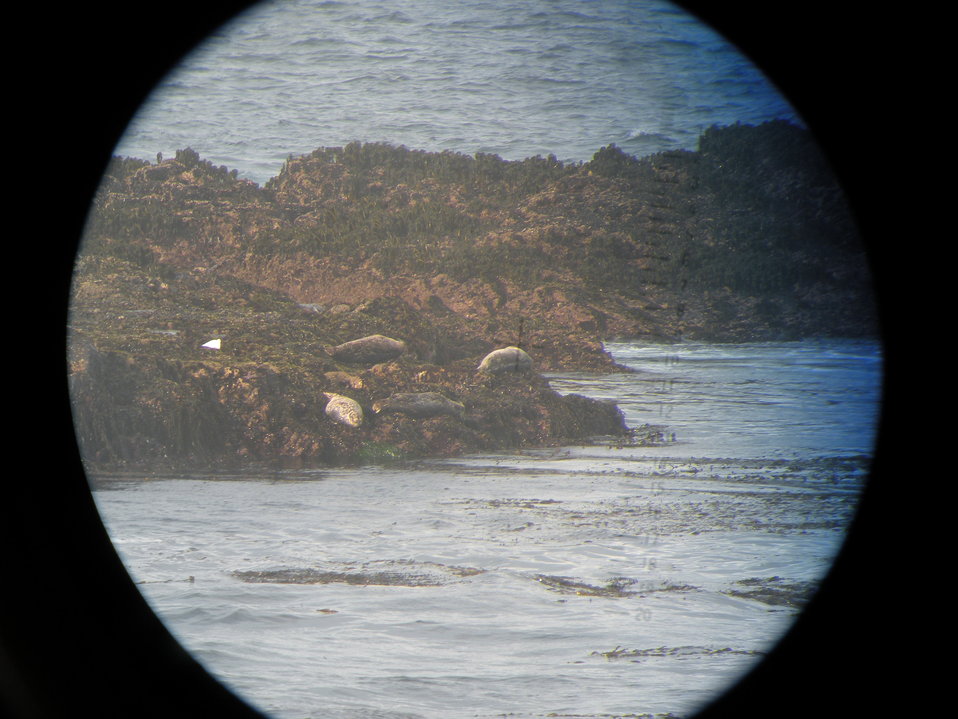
Harbor seals lounging along the shore at Point Piedras Blancas as seen through big-eye lens.